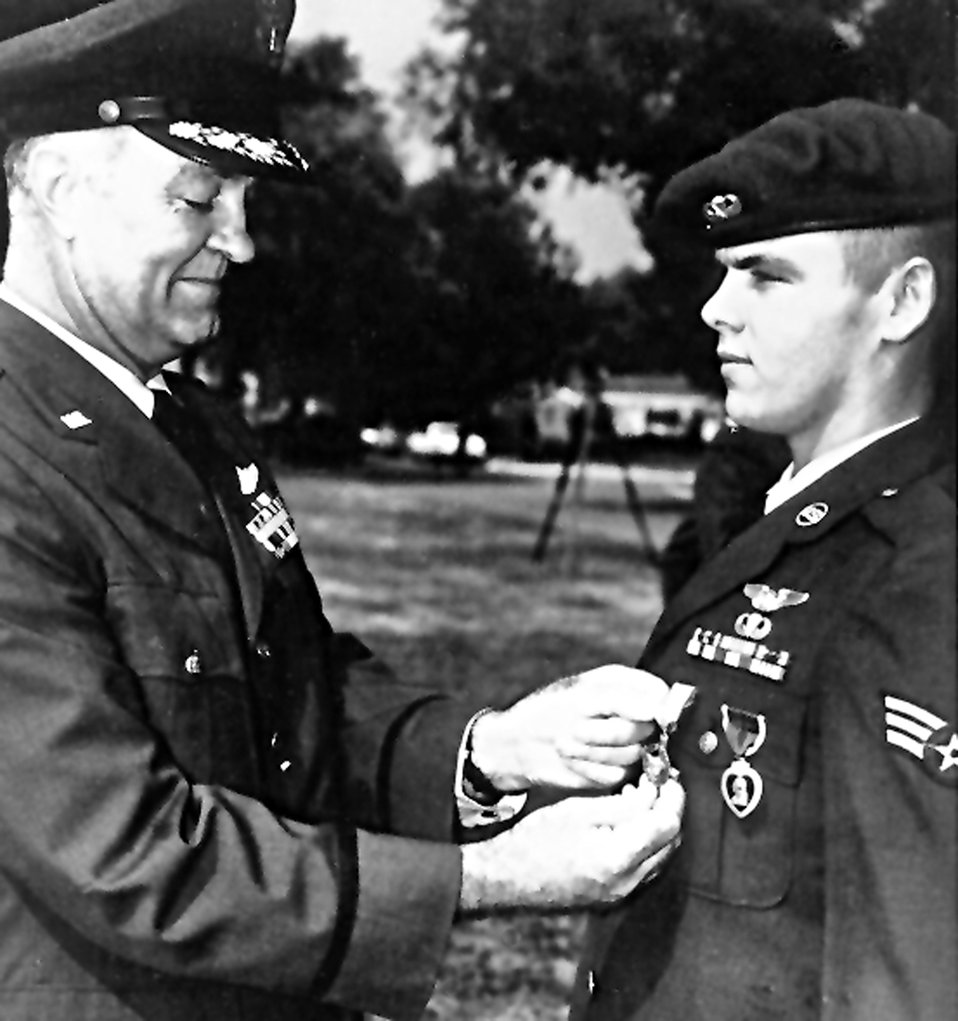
U.S. Heroes

Airman 1st Class Duane Hackney receives an Air Force Cross. He was the first living recipient of the medal.